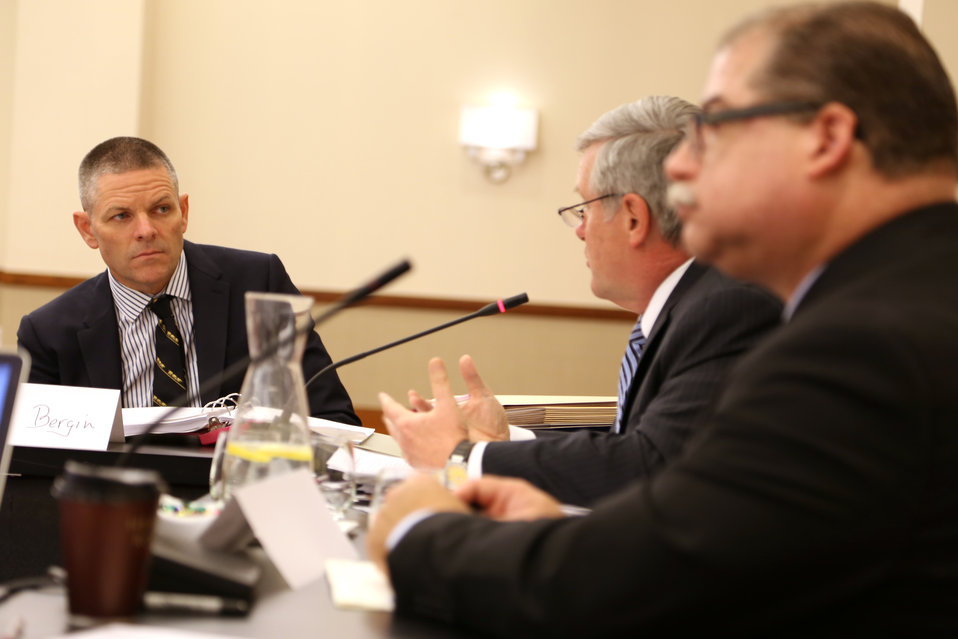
Wildlife Trafficking Advisory Council Meeting March 20, 2014